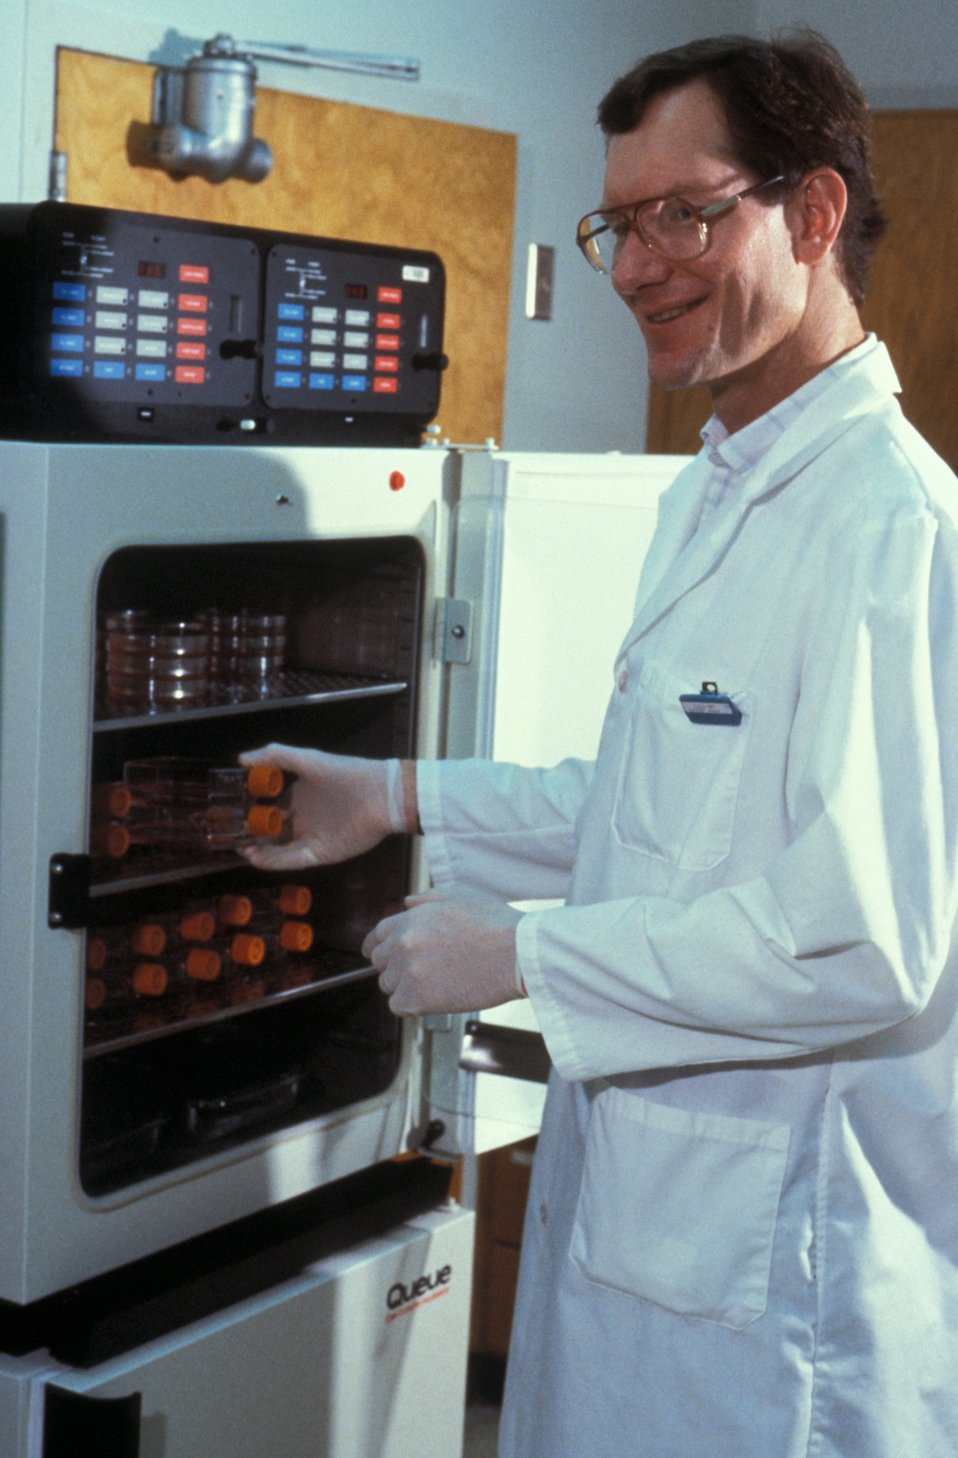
This CDC lab technician is working on AIDS research.